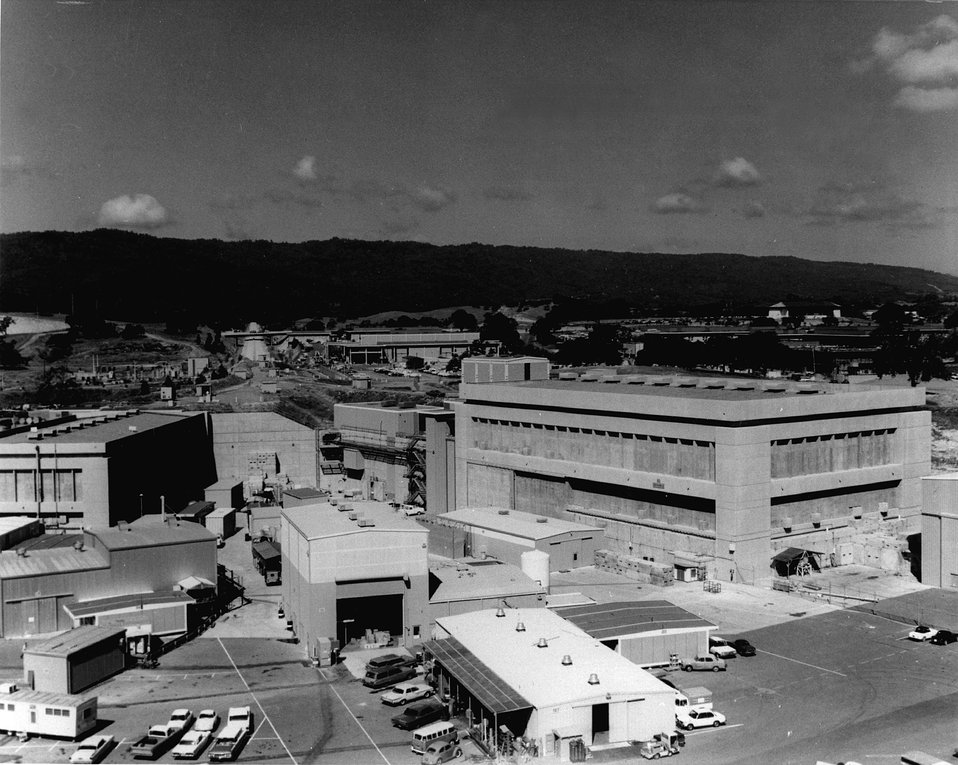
Target (exit) end of the Sanford Linear Accelerator showing End Station A (large building at right) and End Station B (large building at left.) Circa 1969.